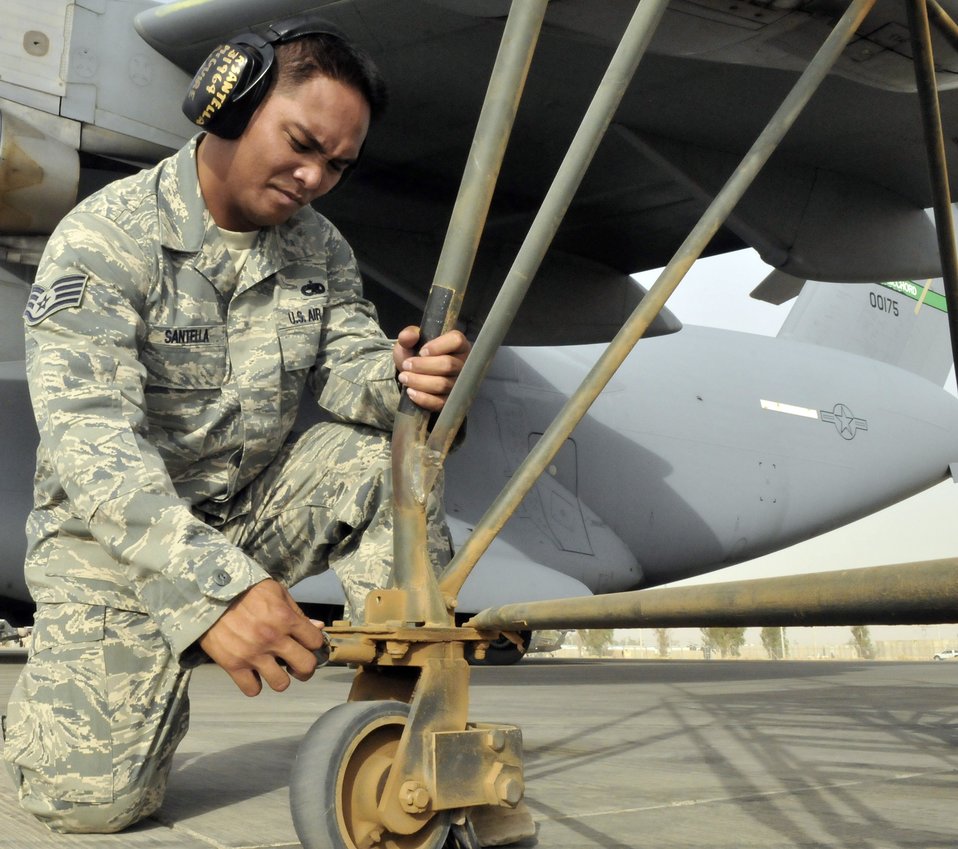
C-17 maintenance crew

Staff Sgt. Ryan Santella locks a caster wheel on maintenance stand July 12, 2010, at Joint Base Balad, Iraq. Sergeant Santella, a native of Honolulu, is deployed from Joint Base McGuire-Dix-Lakehurst, N.J.